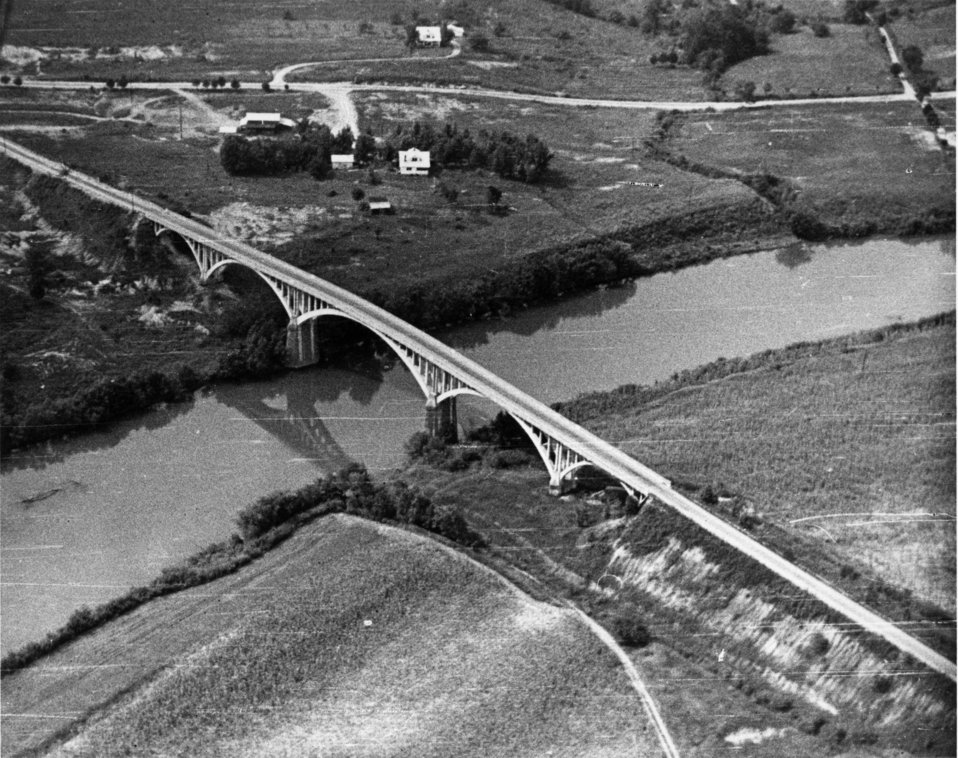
Solway Bridge Oak Ridge - Knoxville

74-28 DOE photo Ed Westcott 8-30-1943 Oak Ridge Tennessee